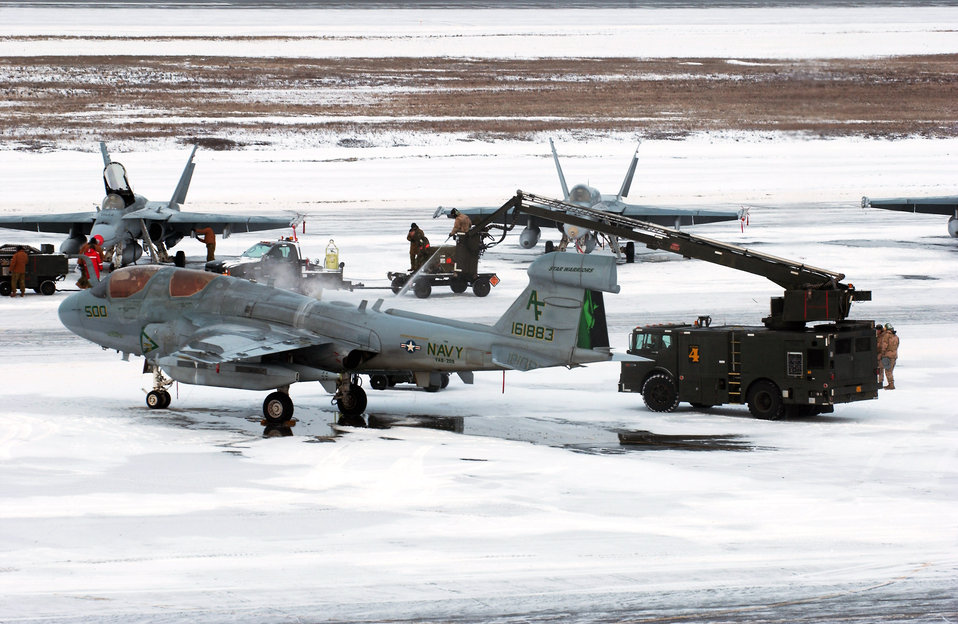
Red Flag-Alaska pilots engage in realistic combat scenarios

Maintainers remove snow and de-ice a Navy EA-6B Prowler for the first official day of Red Flag-Alaska 08-2 April 7 at Eielson Air Force Base, Alaska. Red Flag-Alaska provides training for deployed maintenance and support personnel in sustainment of a large-force deployed air operation. The EA-6B is assigned to the Naval Air Station Widbey Island, Wash.